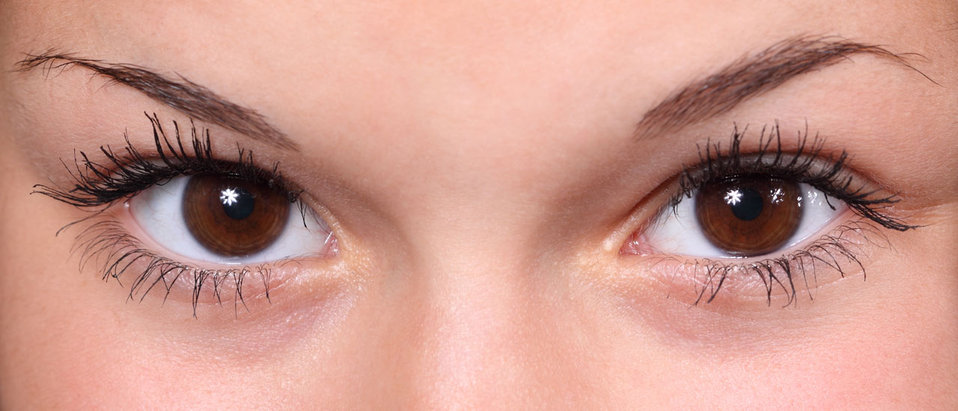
Closeup eyes

Closeup image of eyes.